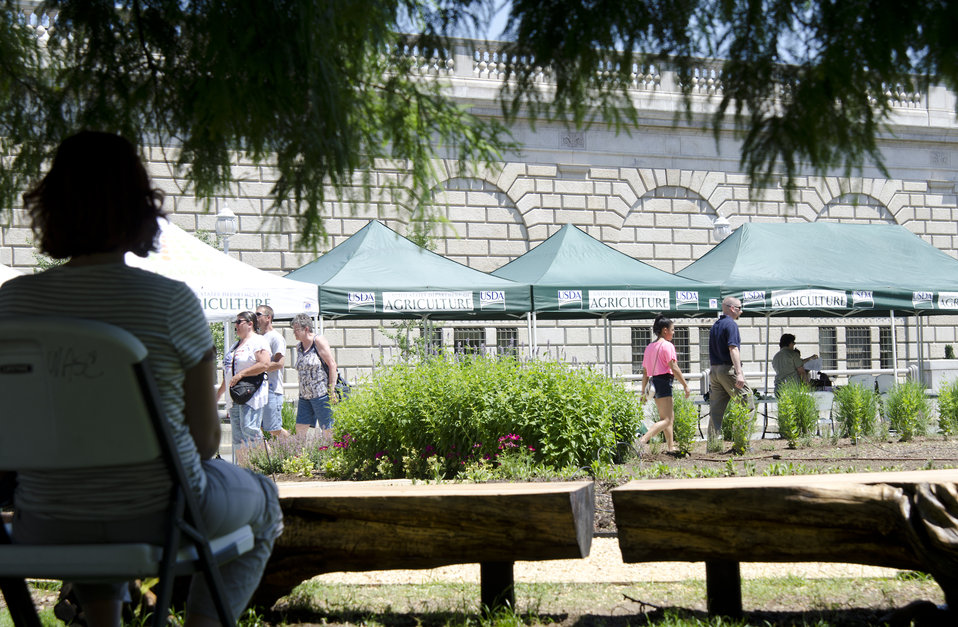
Peoples Garden Pollinator Display at the U.S. Department of Agriculture in Washington, DC, on Friday, June 21, 2013.